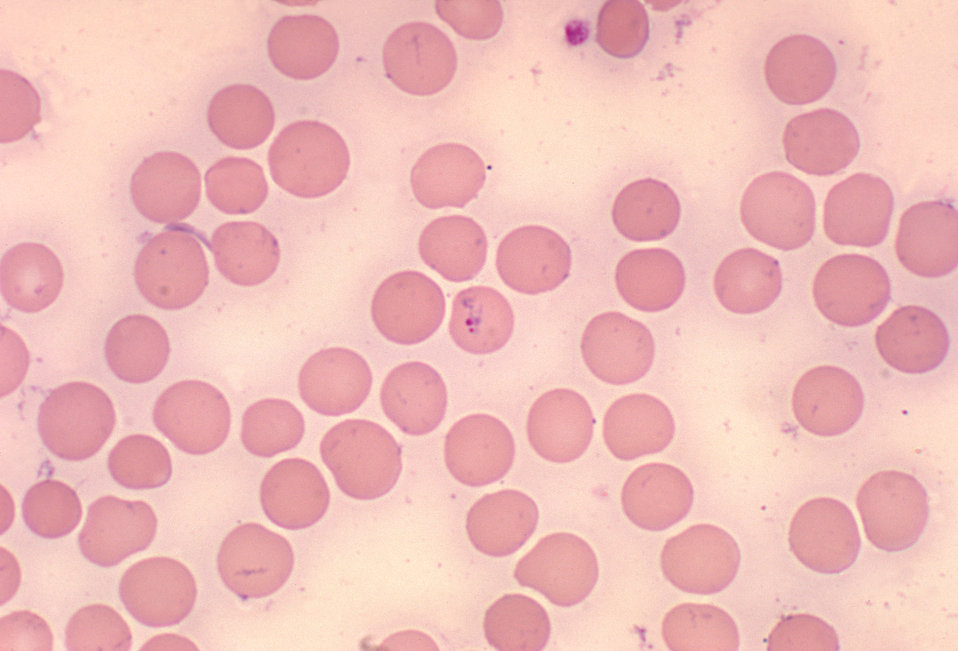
Babesia microti in blood smear. Giemsa stain. Parasite.